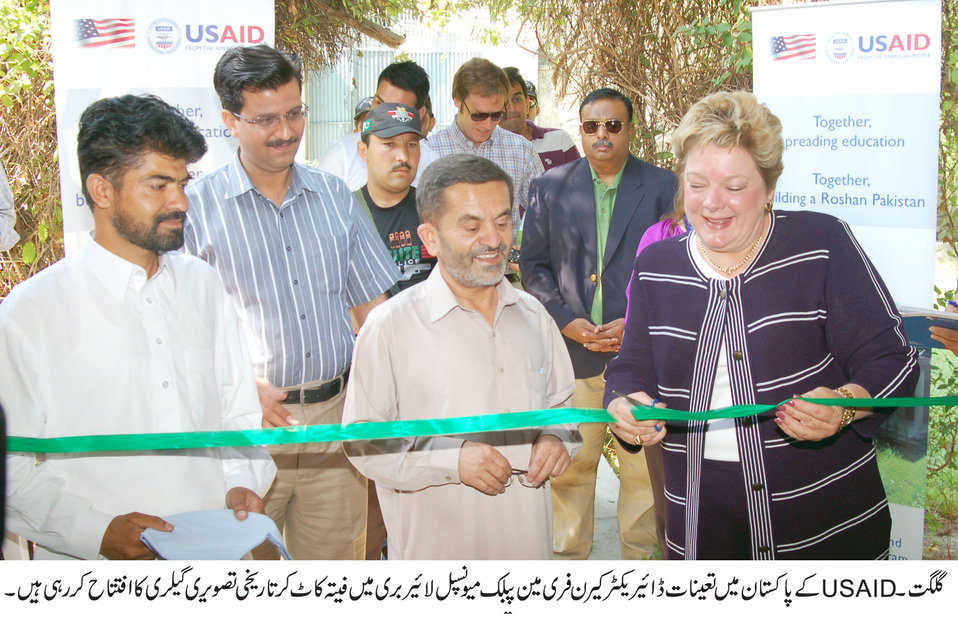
Deputy Director Karen Freeman’s visit to Gilgit Library

Karen Freeman visited the Municipal Gilgit Library on Monday, July 9. She was accompanied by other USAID staff and the staff from the Ambassador’s Fund Program. A the library, she met with Deputy Commissioner of Gilgit, Mr. Arqam and library staff, toured a photo display, and had an informal discussion with the library staff and community members about the USAID-funded project. Library staff showed the equipment funded by USAID (computers, internet, scanners, etc). The visit concluded by a Q & A session with media.